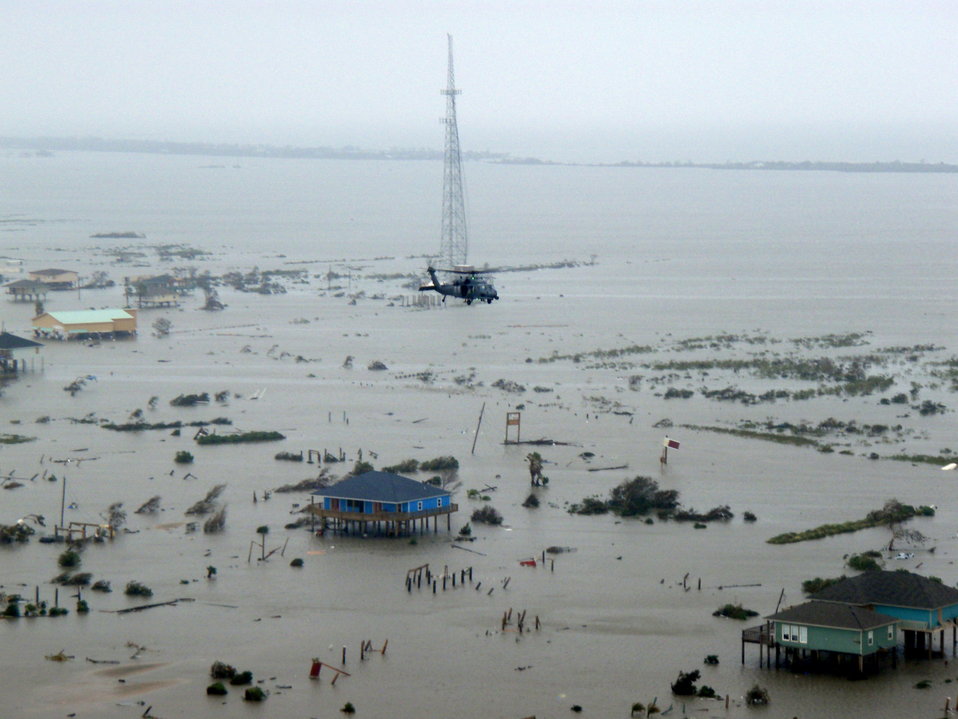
Helicopter aircrews rescue hurricane victims

A Joint Task Force 129 crew on board an HH-60G Pave Hawk flies over Crystal Beach, Texas, Sept. 13. The JTF 129 crews rescued 48 people and pets stranded in the Galveston area.